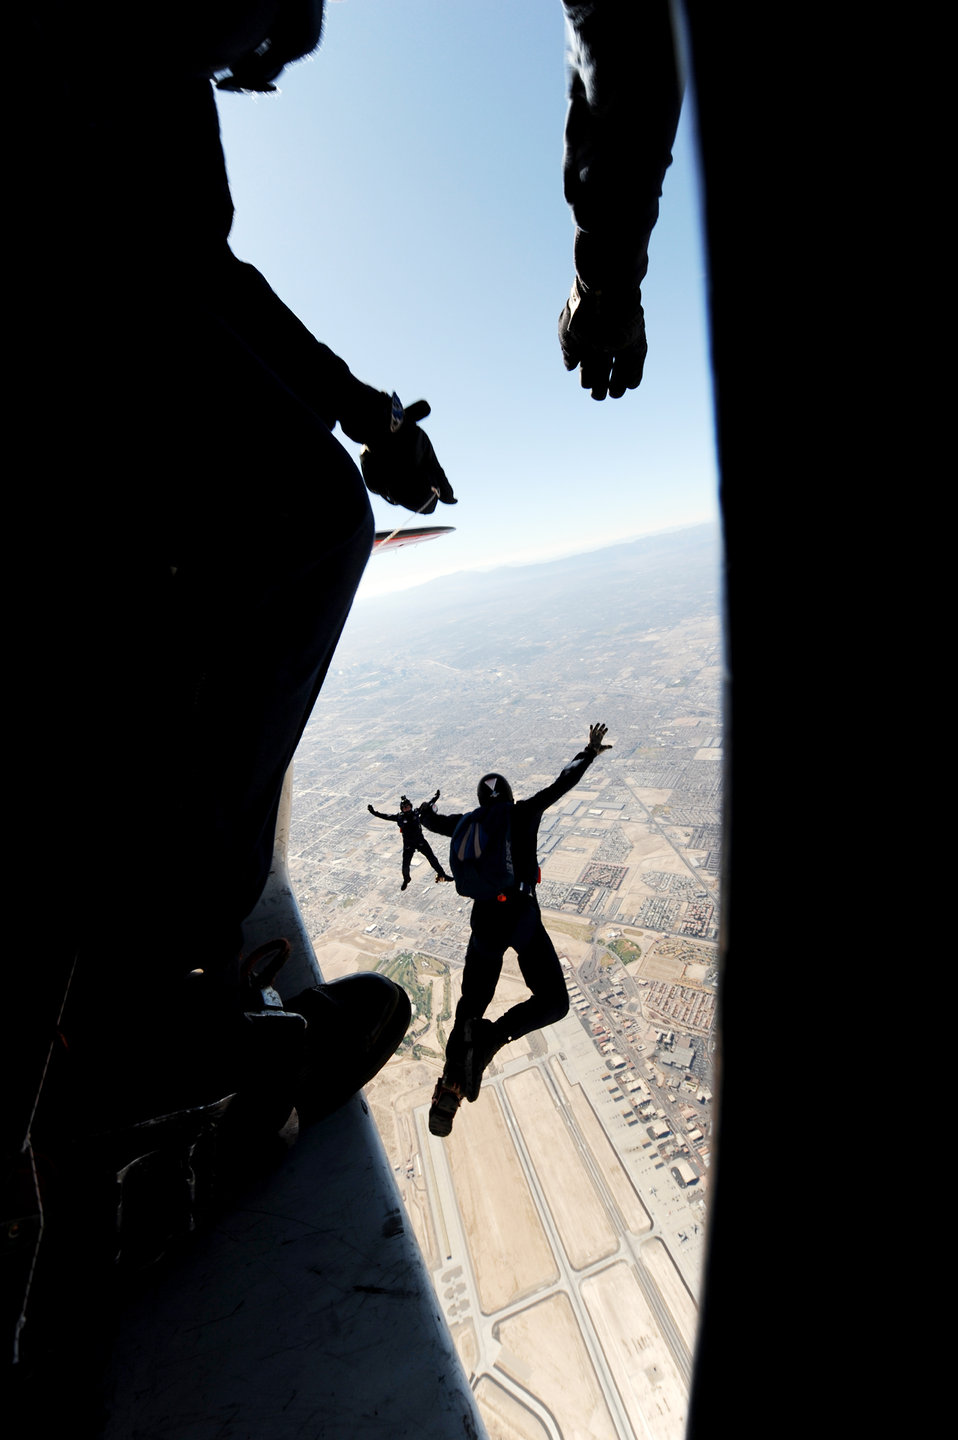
Thunderbirds close air show season

The U.S. Air Force Academy Parachute Team jumps out of their aircraft over Nellis Air Force Base, Nev., for the Aviation Nation air show Nov. 15, 2009. The open house is an opportunity for the Las Vegas community to view aerial demonstrations and static displays of various aircraft from the military.